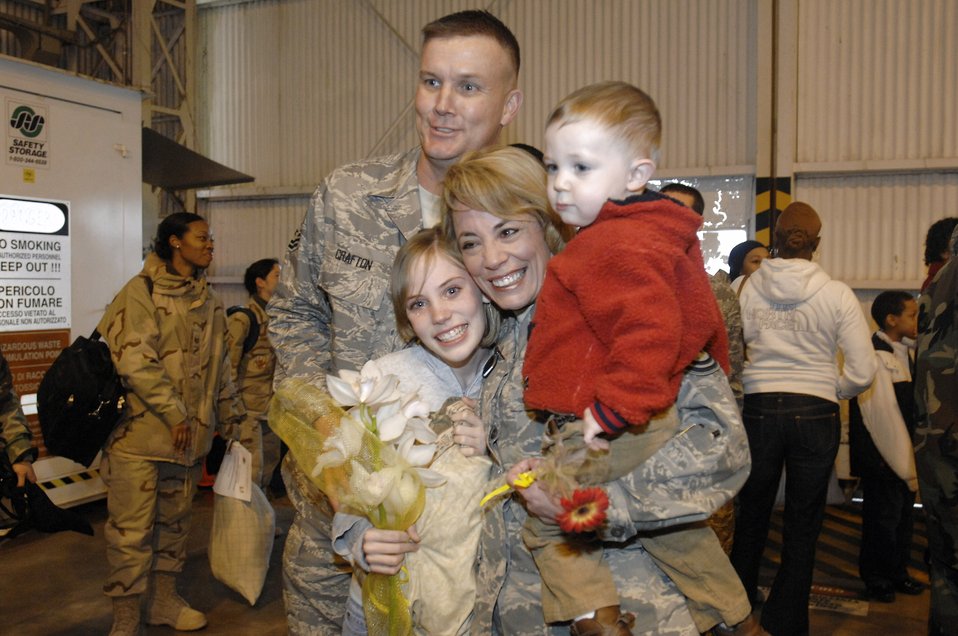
Who is on your team?

Master Sgts. Chris Crafton and Paige Crafton and their two children Zackary and Taylor embrace each other after Paige's return from a long deployment Jan. 15 at Aviano Air Base, Italy.